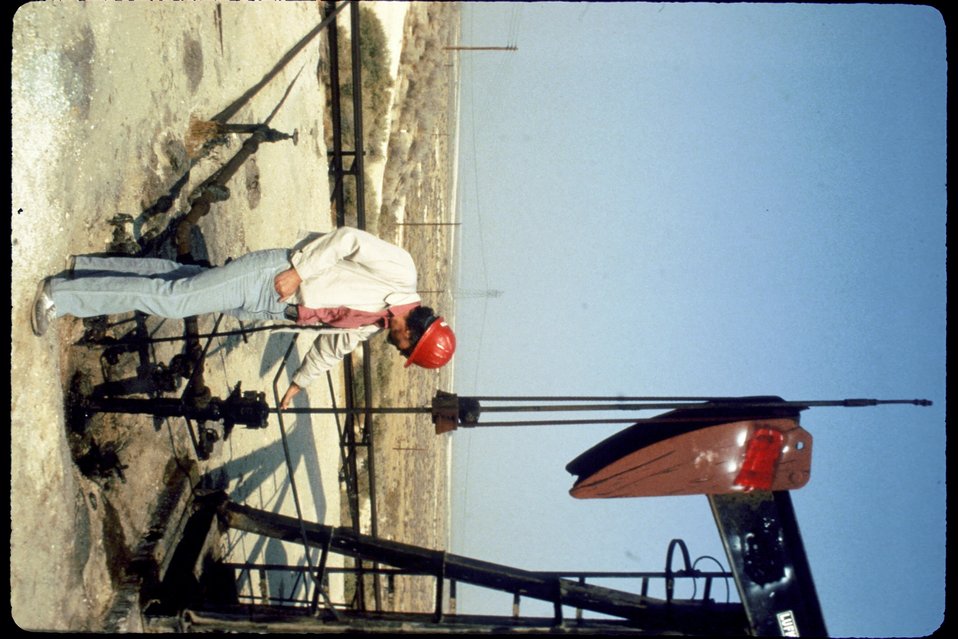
PET Mike Davis Checking Pumper